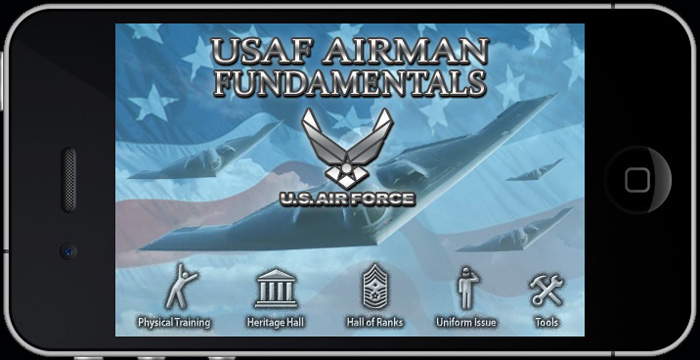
AF offers Airmen free mobile app for basic military training

Shown here is an image of the Air Force Airmen Fundamentals interface on an iPhone. The mobile app is available for download from the iTunes Store and will be available from the Android Market in early July.